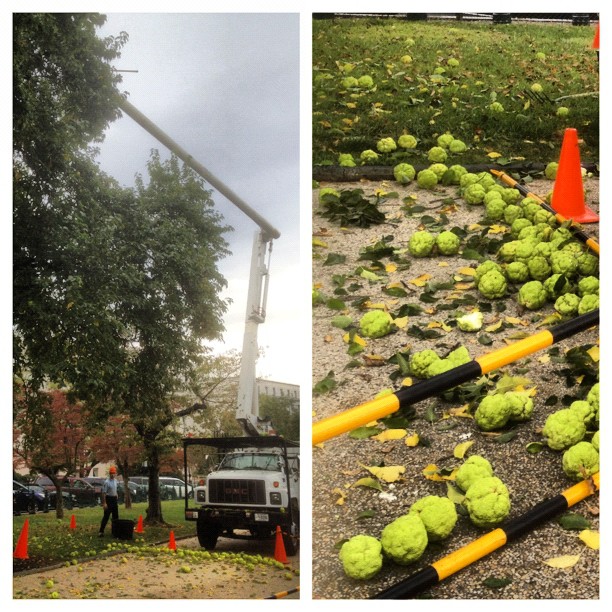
Capitol harvest. AOC arborists collect large Osage-orange fruit. Tree named for Osage Nation who used it for bows.